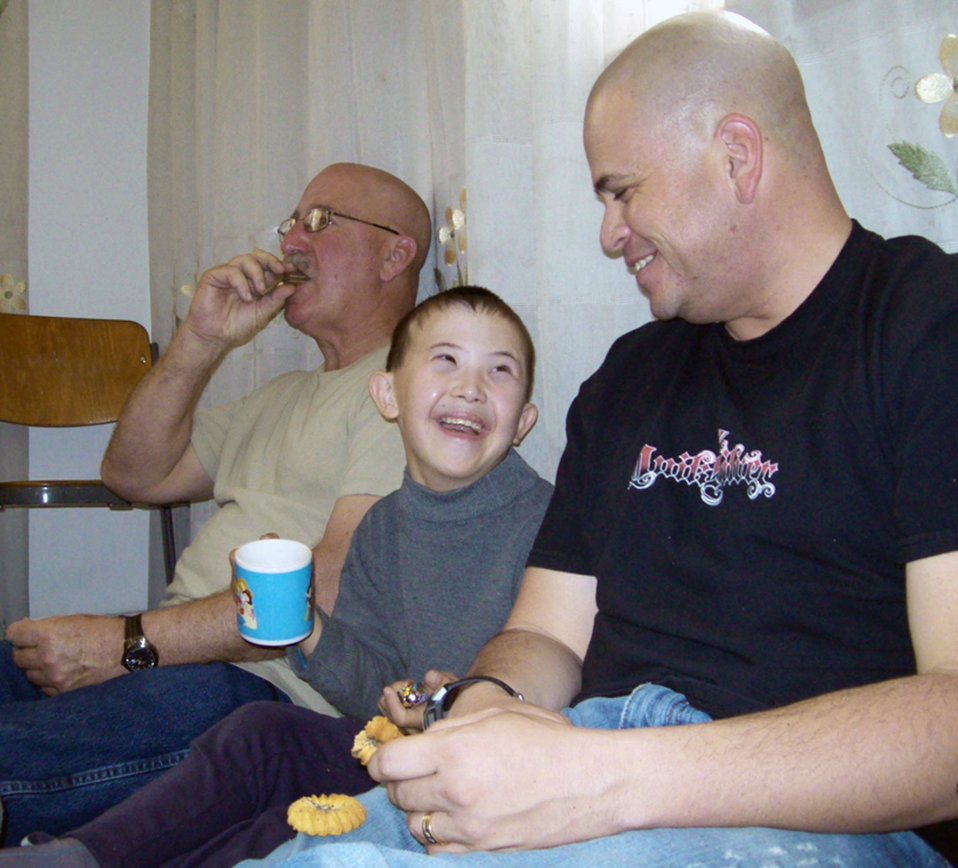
Airmen take heed for those in need

Master Sgt. Roland Rendon shares a laugh with a child from Umut-Nadjeshda Children's Rehabilitation Center May 9 in Bishkek, Kyrgyzstan. Sergeant Rendon and a group of Airmen from nearby Manas Air Base visited the center to do various improvement projects and play with the children. The California Air National Guard member is deployed to the 376th Expeditionary Security Forces Squadron. His hometown is Fresno, Calif.